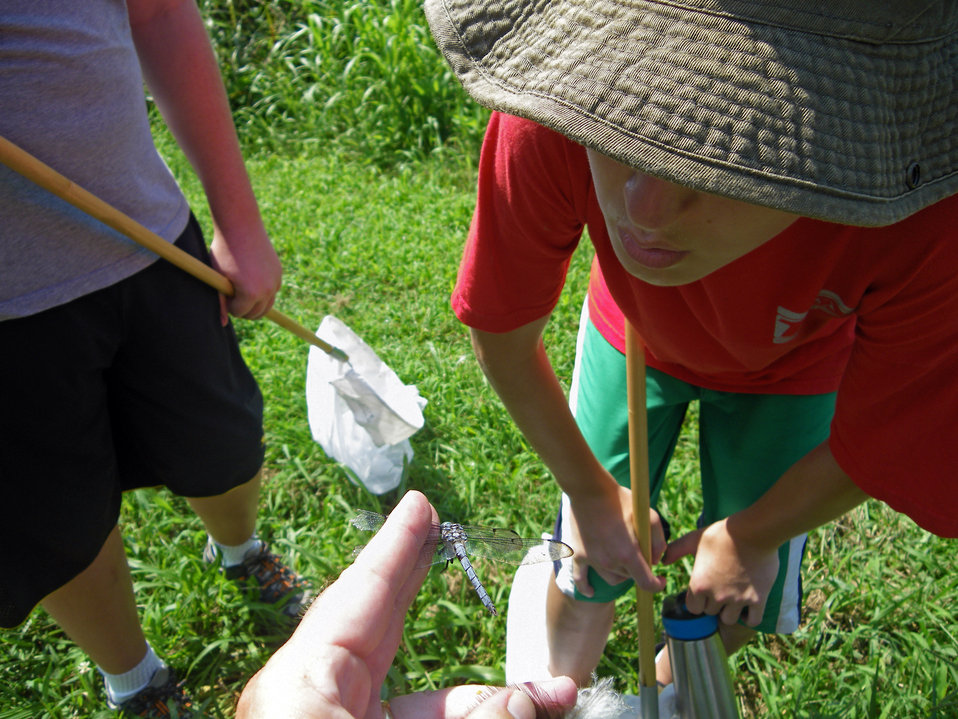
Environmental education

Presquile National Wildlife Refuge.